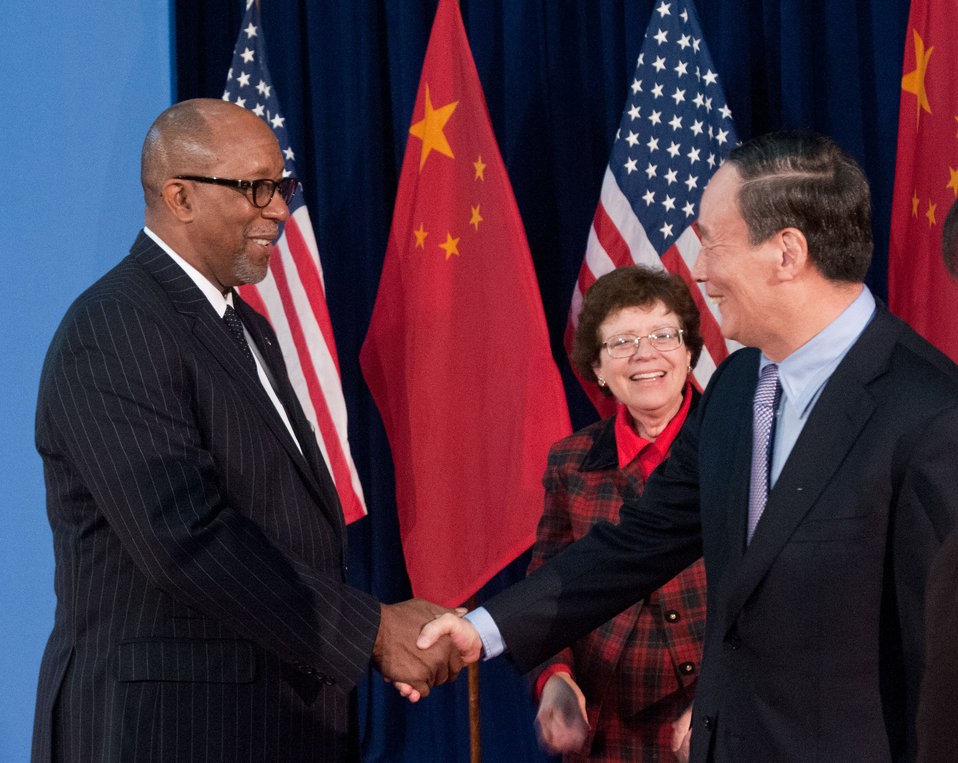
(L to R) U.S. Trade Representative Ron Kirk, and Acting U. S. Commerce Secretary Rebecca Blank representing the U.S. greet Chinese Vice Premier Wang Qishan to the 23rd Session of the U.S. China Joint Commission on Commerce and Trade (JCCT) at the Andrew W. Mellon Auditorium in Washington, D.C. on Wednesday, Dec. 19, 2012. The JCCT holds high-level plenary meetings on an annual basis to review progress made by working groups that focus on a wide variety of trade issues. These working groups meet throughout the year to address topics such as intellectual property rights, agriculture, pharmaceuticals and medical devices, information technology, tourism, commercial law, environment, and statistics.